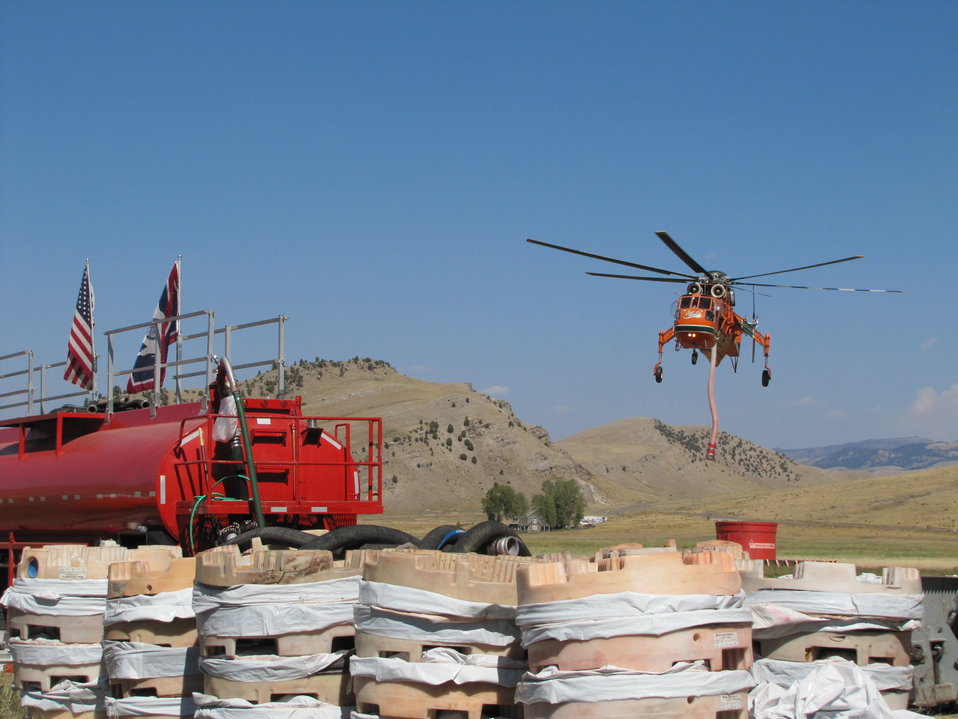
Fire Retardant Mixing Plant and Helicopter Operation

A Skycrane flies up to a dip tank to draw up more fire retardant. The mixing plant, or red tanker on the left, combines bags of retardant powder with water and sends the mixture through a hose to the red dip tank seen on the right. There, the fire retardant can be accessed by the helicopter through a draft (suction) hose suspended from the bottom of the aircraft. Skycranes can generally carry around 1,000 gallons of fire retardant in one load.

The tan and white containers in the foreground of the picture are empty bags of retardant powder that have already been mixed with water. As of September 17, approximately 144,000 gallons of retardant had been dropped on the fire.